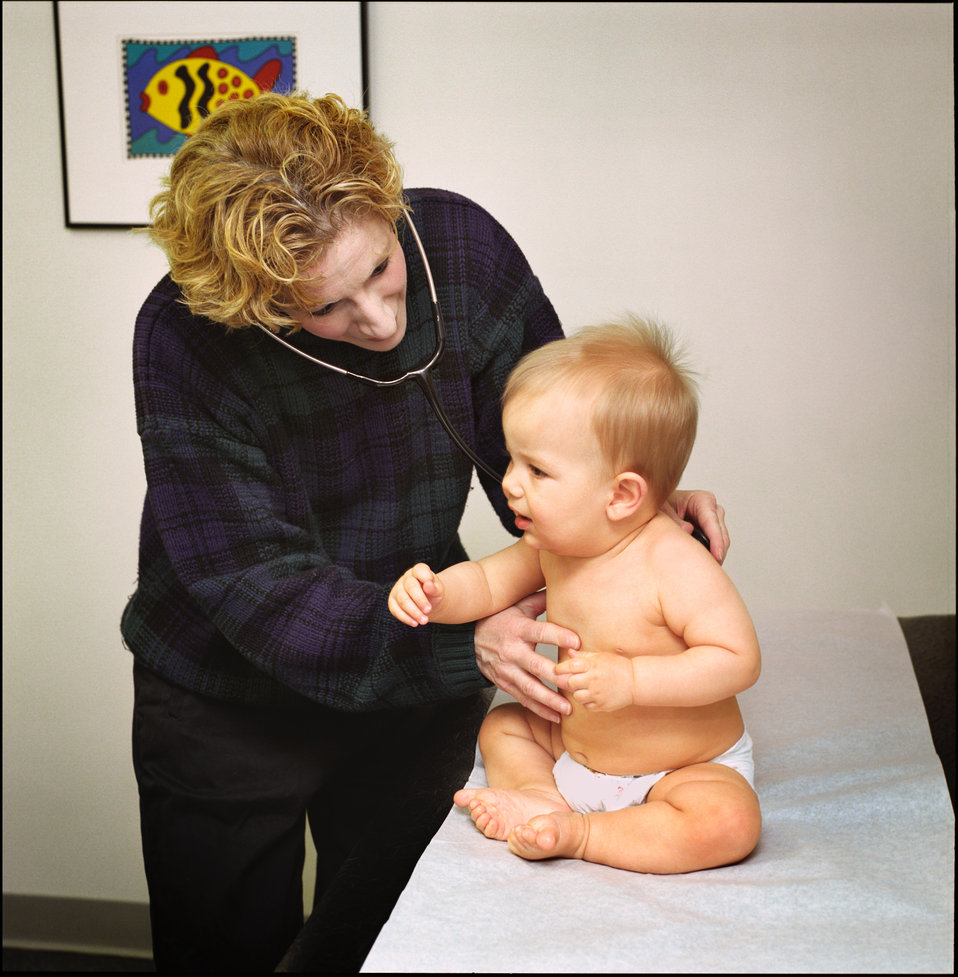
This photograph depicts a physician examining a 9mo. old infant.